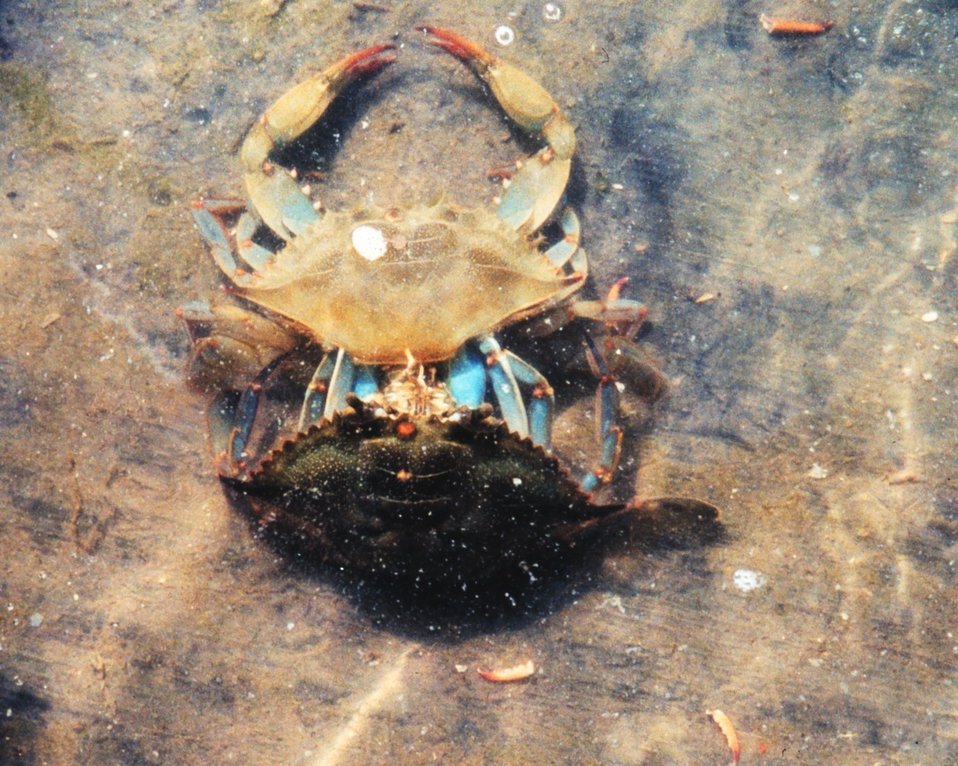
Photo #6 of 8. Having reached the 'buster' molt stage, a Maryland blue crab , Callinectes sapidus, sheds its shell. The genus and species mean tasty beautiful swimmer.